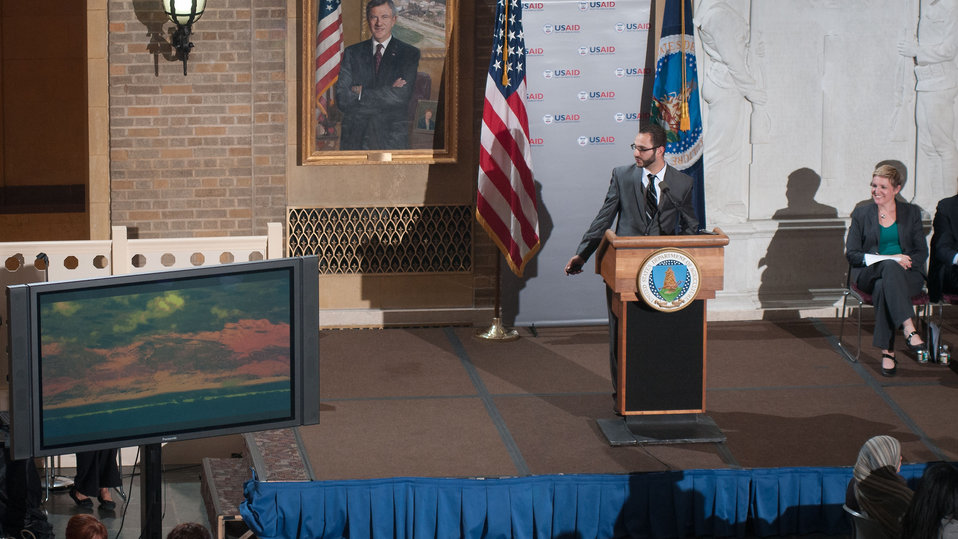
slamic Relief USA Creative Director and Photographer Ridwan Adhami talks about the concept and preconceived notions he had before the start of his documentary project 'Scars and Smiles' and the new perspectives into the human condition he gained through the individuals he met and photographed; during the Iftar event, co-sponsored by the Iftar celebration, co-sponsored by the U.S. Department of Agriculture, U.S. Agency for International Development (USAID) and Islamic Relief USA, on Tuesday, August 7, 2012, in the USDA Whitten Building, in Washington, D.C. Ramadan is the month of fasting, intensive prayer, sacrifice and worship for Muslims around the world. Throughout this month, Muslims fast during the day, abstaining from consuming food from dawn to dusk and using this time to purify spiritually. Fasting reminds Muslims of the poverty and hunger suffered by many in the United States and worldwide. It is a connection with those who are hungry not through devotion, but through the many global factors that lead to hunger and famine. Iftar is the meal at which Muslims break their fast at sunset, usually by eating dates, according to the Prophetic tradition.